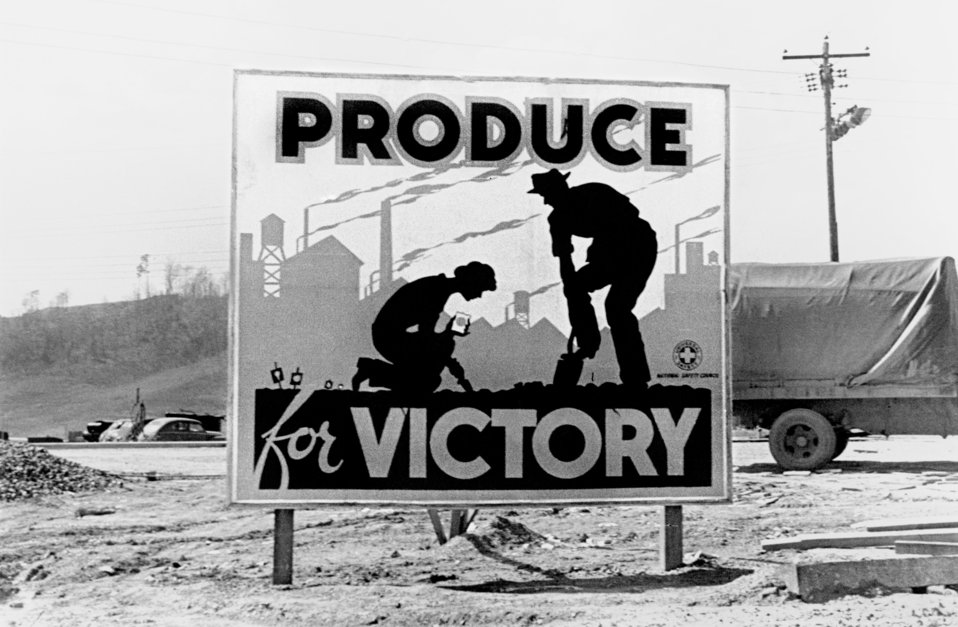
Billboard 1944 Oak Ridge

roll228-13 DOE photo Ed Westcott 4-15-1944 Oak Ridge Tennessee